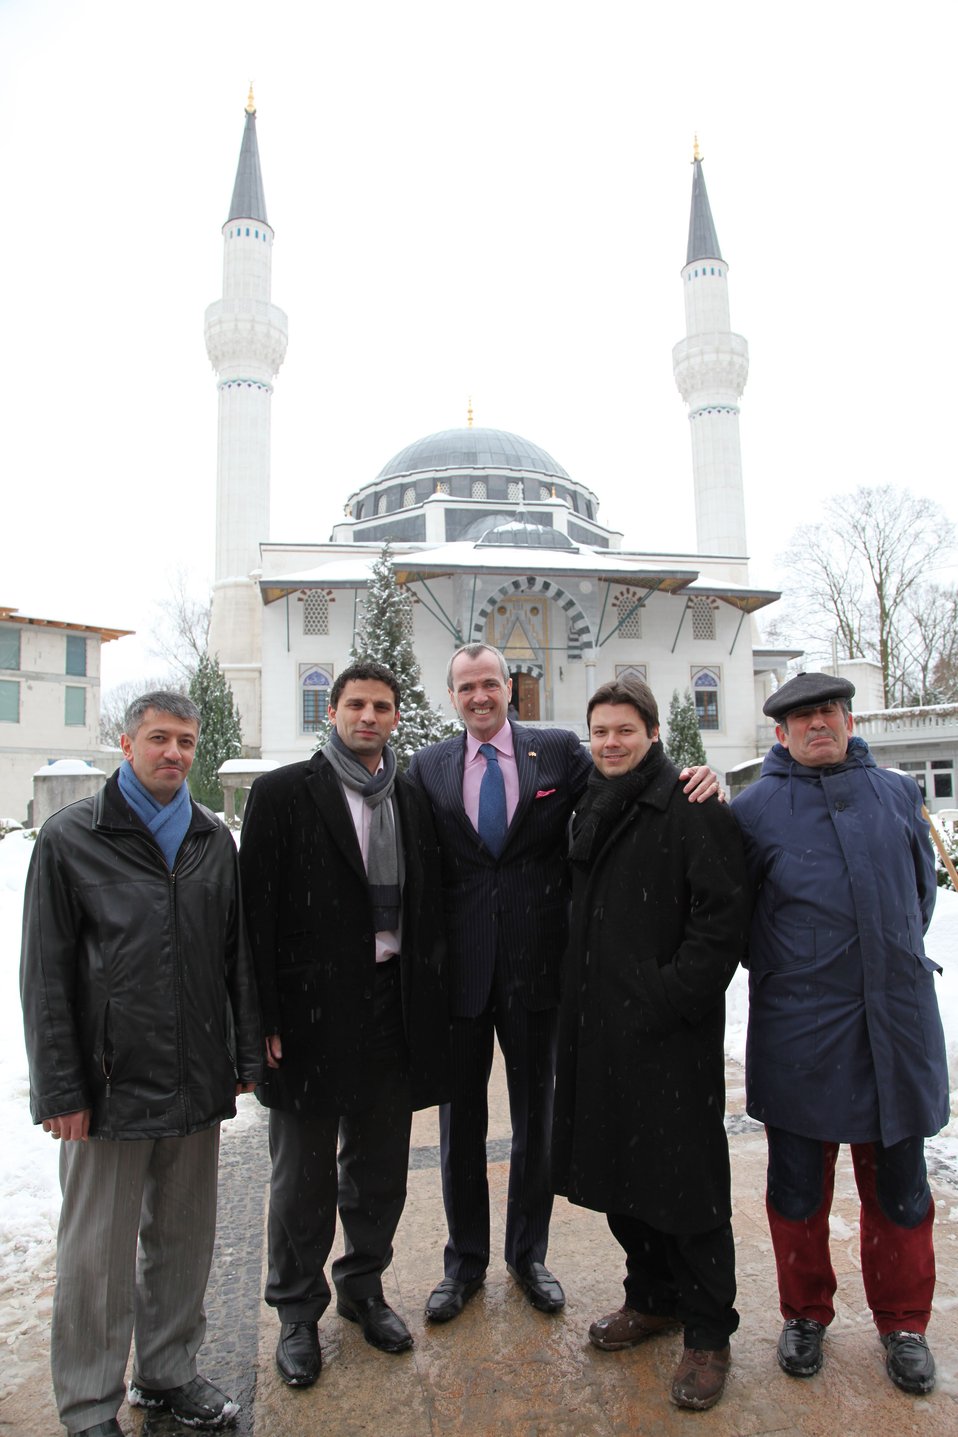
DITIB Representatives Give Ambassador Murphy a Tour of the Sehitlik Mosque

A group of Turkish-Islamic Union of the Institute for Religion (DITIB) representatives welcome U.S. Ambassador to Germany Philip D. Murphy to the Sehitlik Mosque in Berlin, Germany, for a tour and discussion on February 12, 2010.